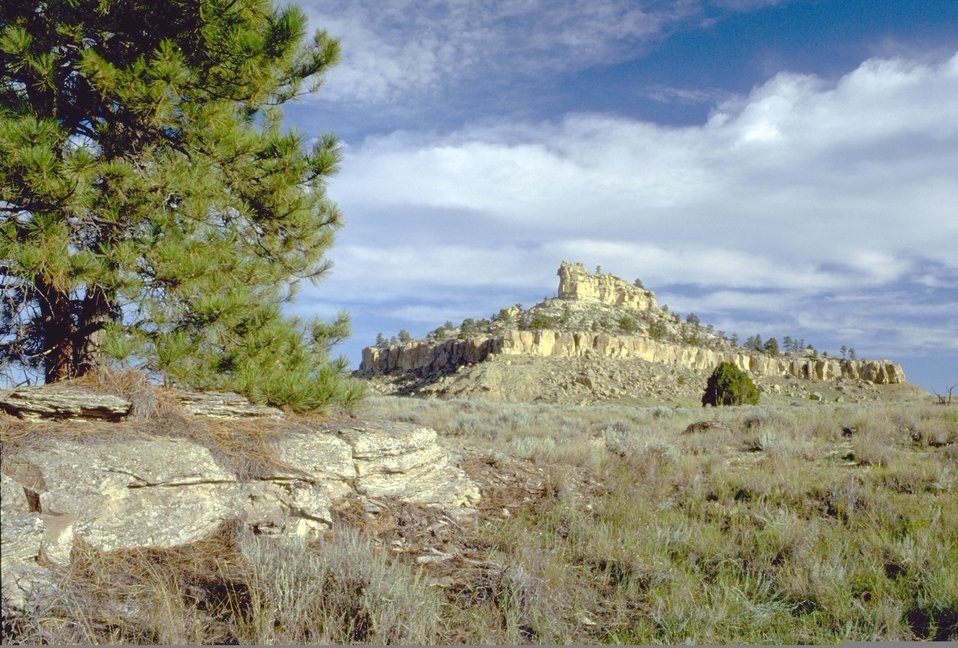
Rocky ridge